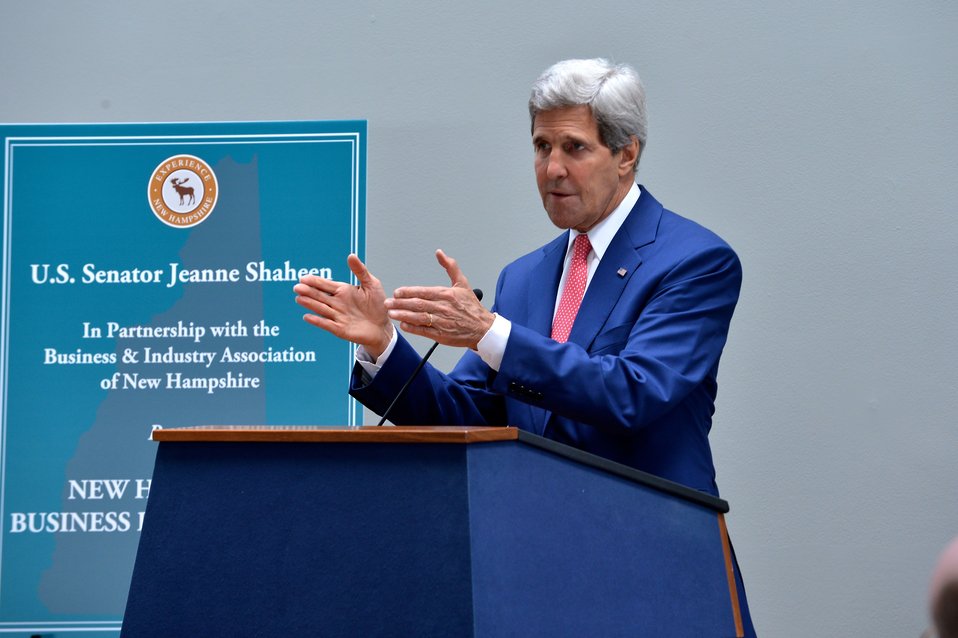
Secretary Kerry Delivers Remarks at Senator Shaheen's 4th Annual New Hampshire Business Day Luncheon

U.S. Secretary of State John Kerry delivers remarks at Senator Jeanne Shaheen's 4th Annual New Hampshire Business Day Luncheon on Capitol Hill in Washington, D.C., on June 11, 2014.